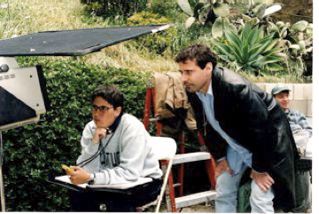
my private photo